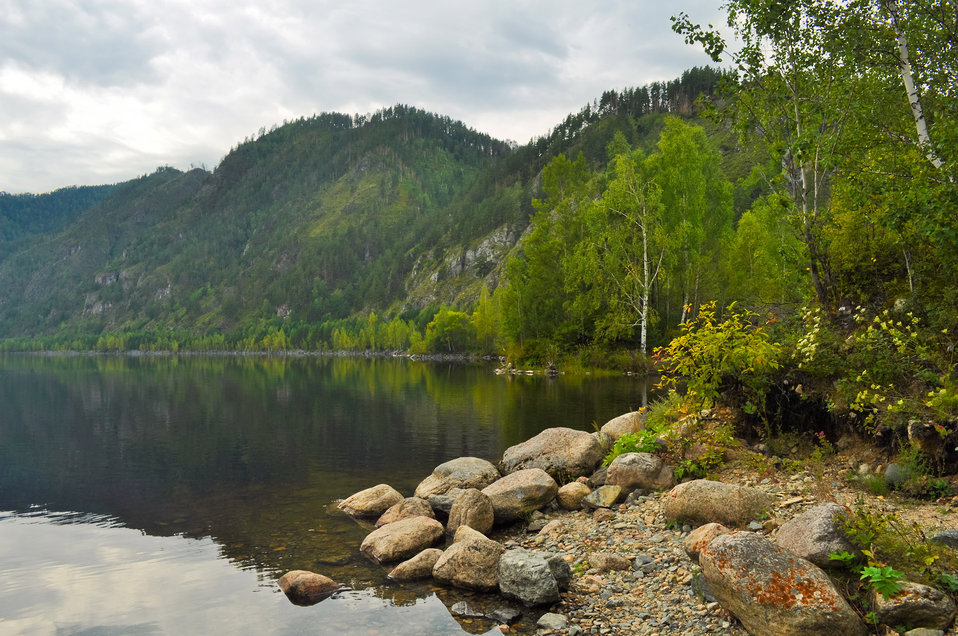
A picturesque place near the river

Large stones on the river bank.